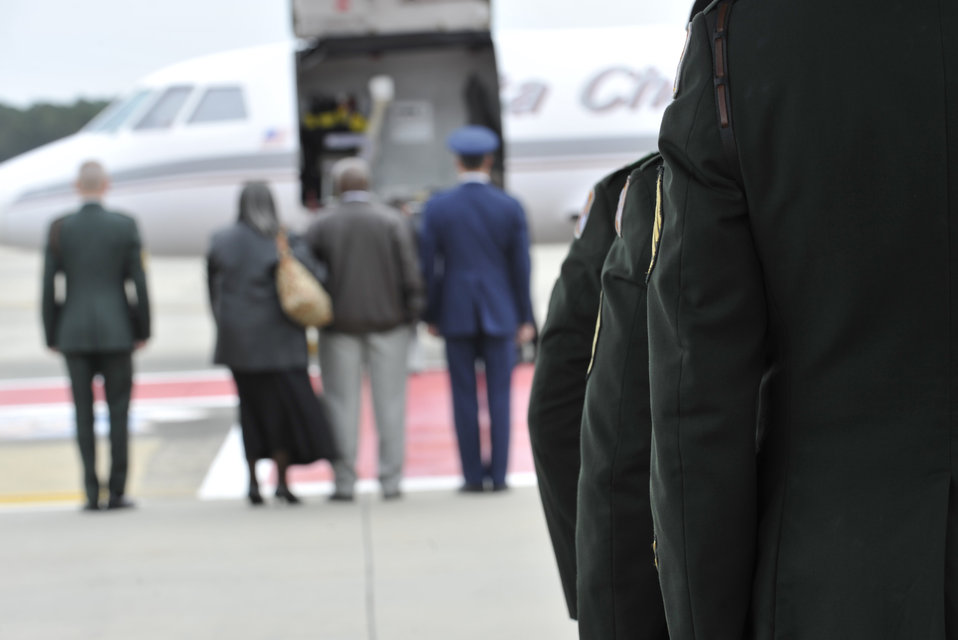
Moody community pay respect to fallen warrior

Members of the 198th Infantry Honor Guard from Fort Benning, Ga., begin to march toward an aircraft that is carrying Army Staff Sgt. Briand Williams, a fallen Soldier, Dec. 3, 2009, at Moody Air Force Base, Ga. Sergeant Williams is from Sparks, Ga., and served in the Army since June 2002.